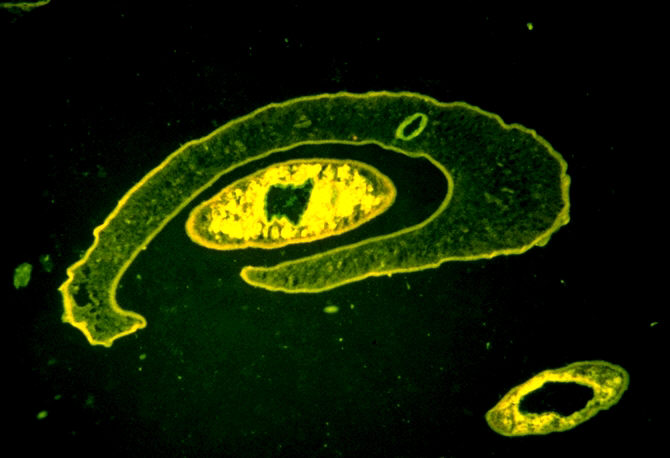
Male and female Schistosoma mansoni in copula, transverse section. Indirect fluorescent antibody stain. Parasite.